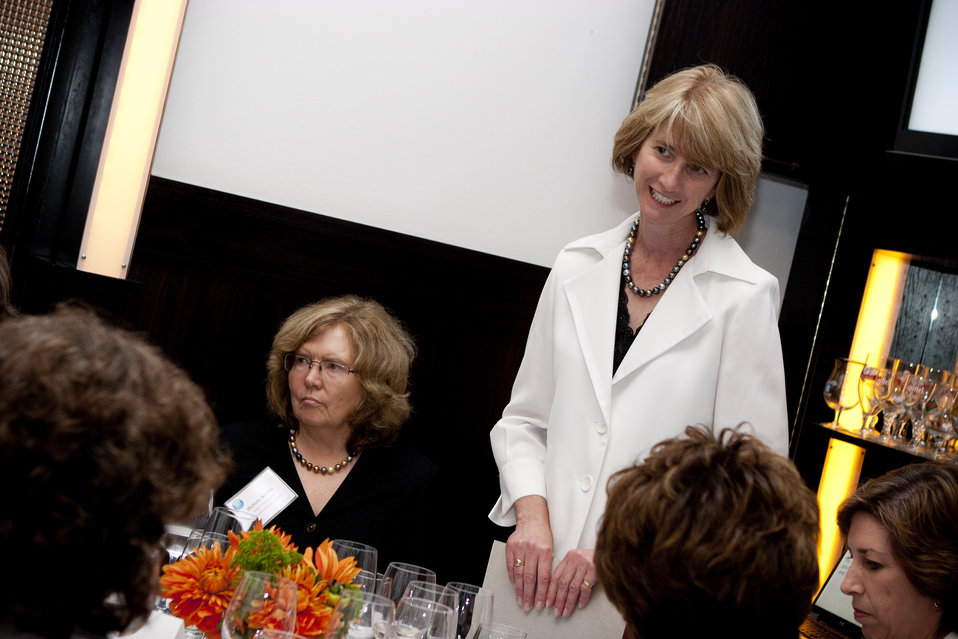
WomenandEnergy 43